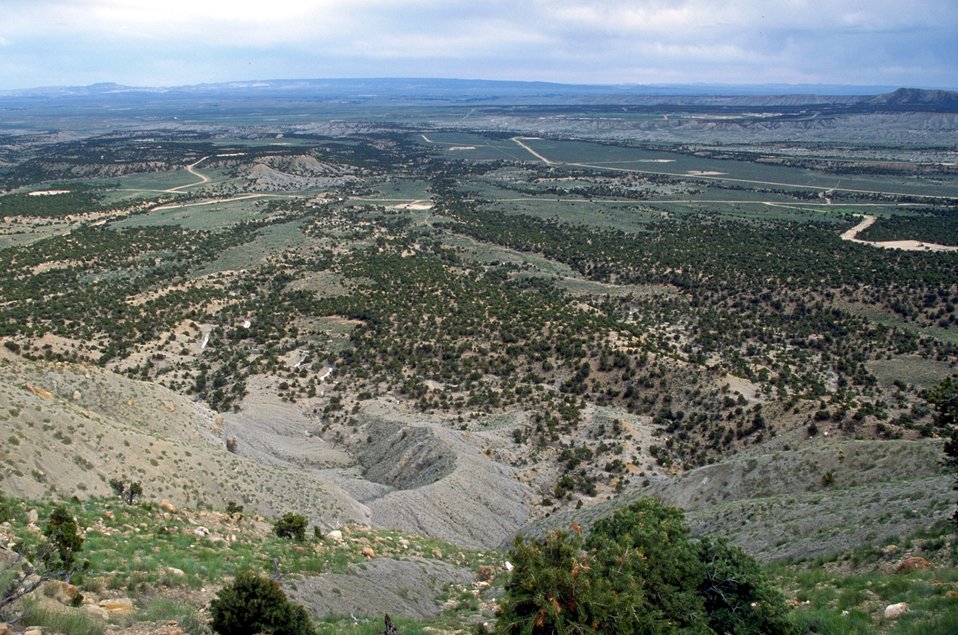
Overlooking coal bed methane production units near Price, Utah.